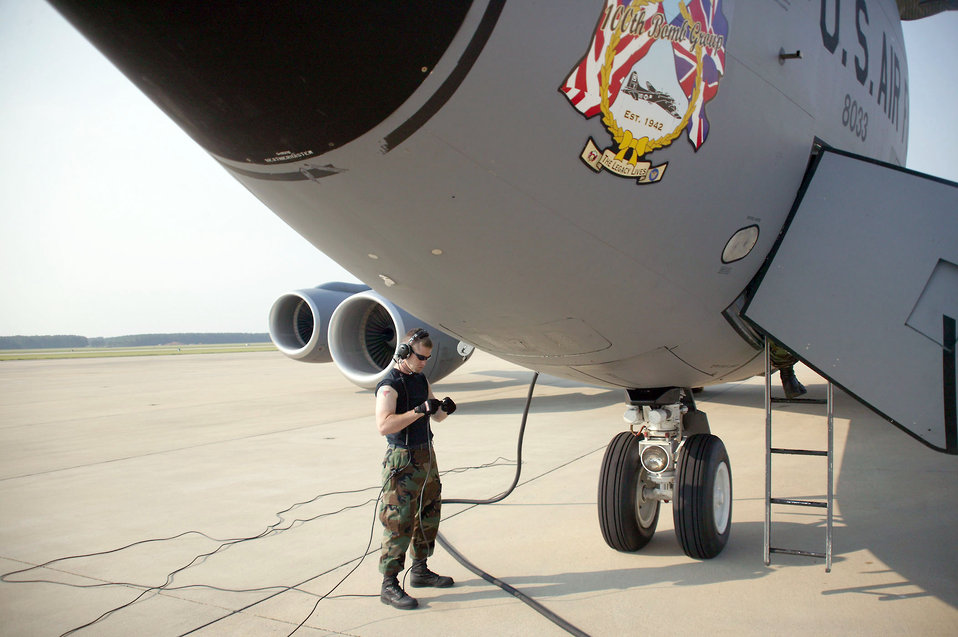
Shaw hosts Operation Iron Thunder

Senior Airman Vernon Russell prepares a KC-135 Stratotanker for departure at Shaw Air Force Base, S.C., on July 18 as part of Operation Iron Thunder. Airman Russell is with the 100th Aircraft Maintenance Squadron at Royal Air Force Mildenhall, England.